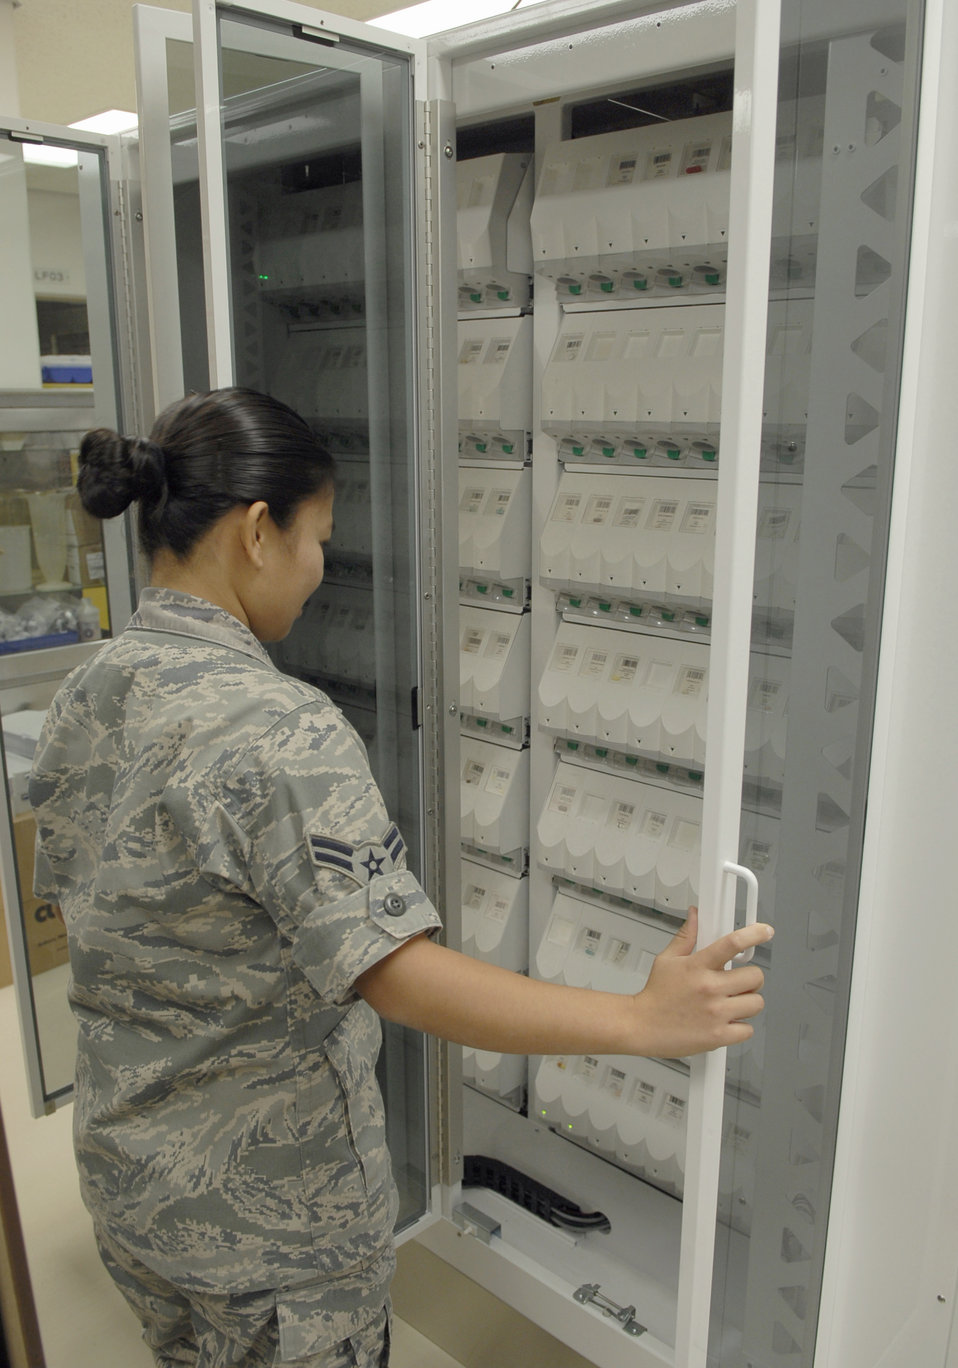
Kadena ROBOTx

Airman 1st Class Roma Terry reviews the different types of medication the PharmASSIST ROBOTx is stocked with Dec. 10, 2010, at Kadena Air Base, Japan. The PharmASSIST can store anywhere from 70 to 140 prescription dispensers at one time based on pharmacy volume, budget and requirements. Airman Terry is a pharmacy technician with the 18th Medical Support Squadron.